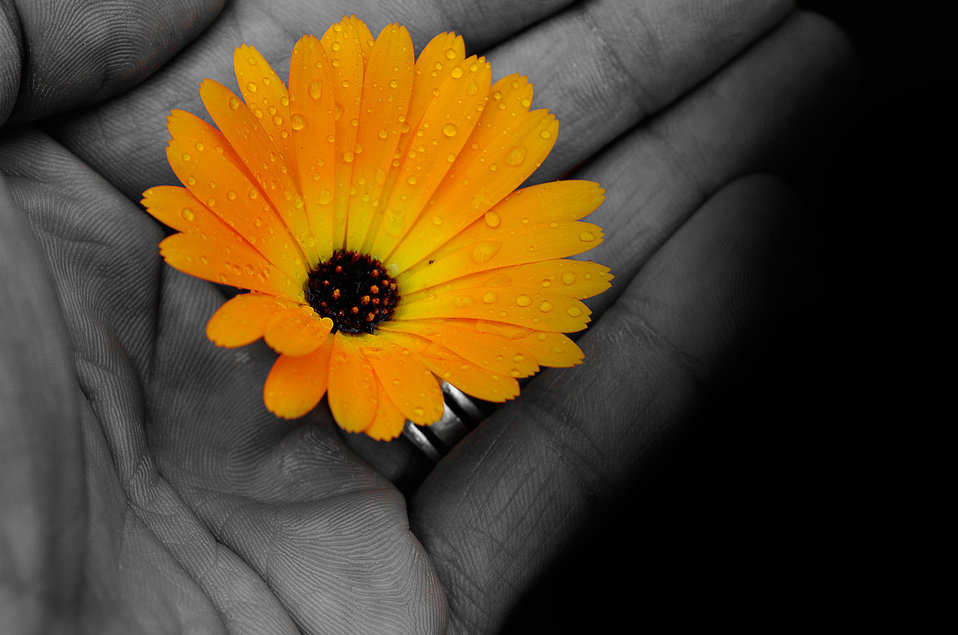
Flower in the hand.